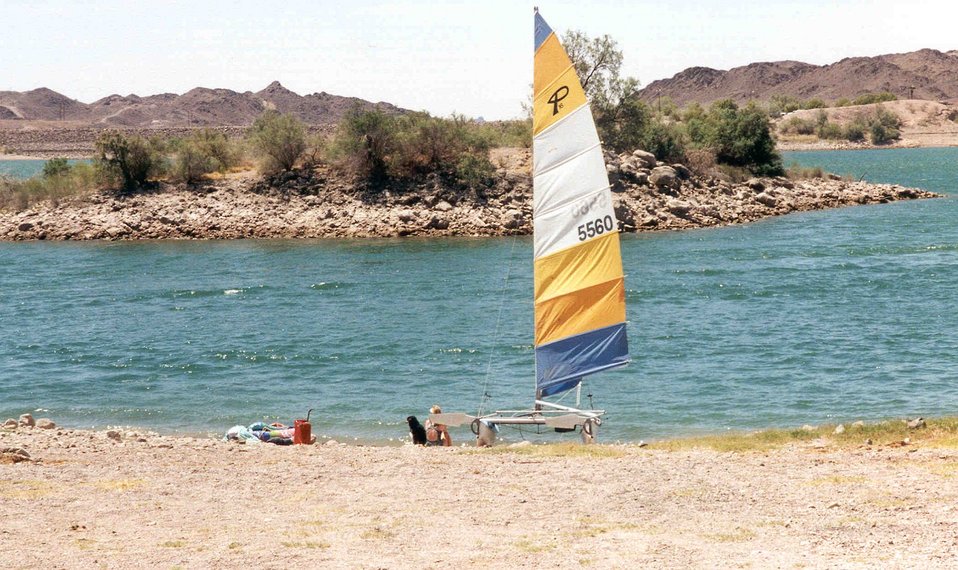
Sailing at Senator Wash on a beautiful morning.